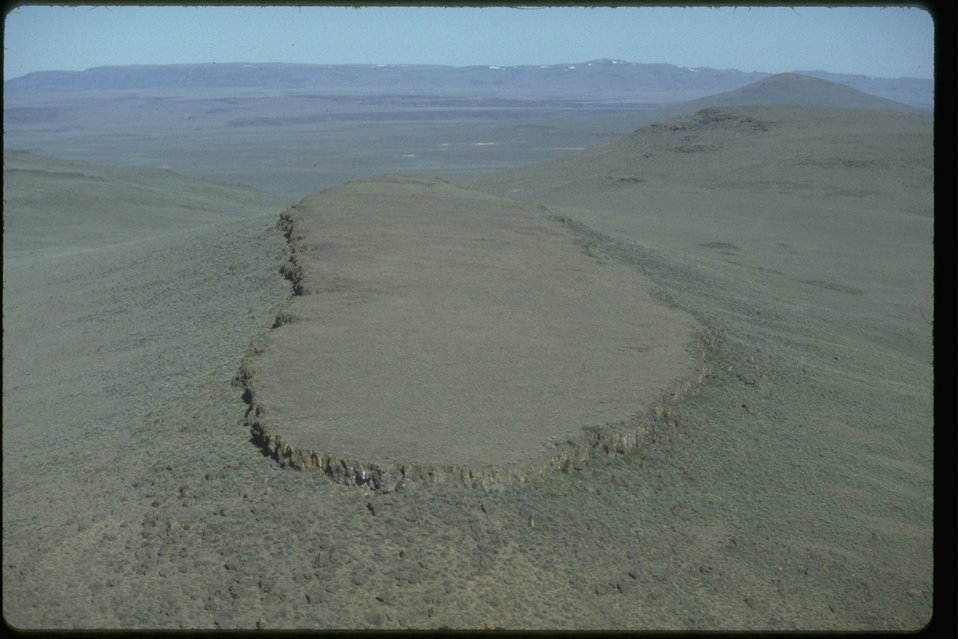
Arial shot of the Spalding Wilderness Study Area. OR 1-139.